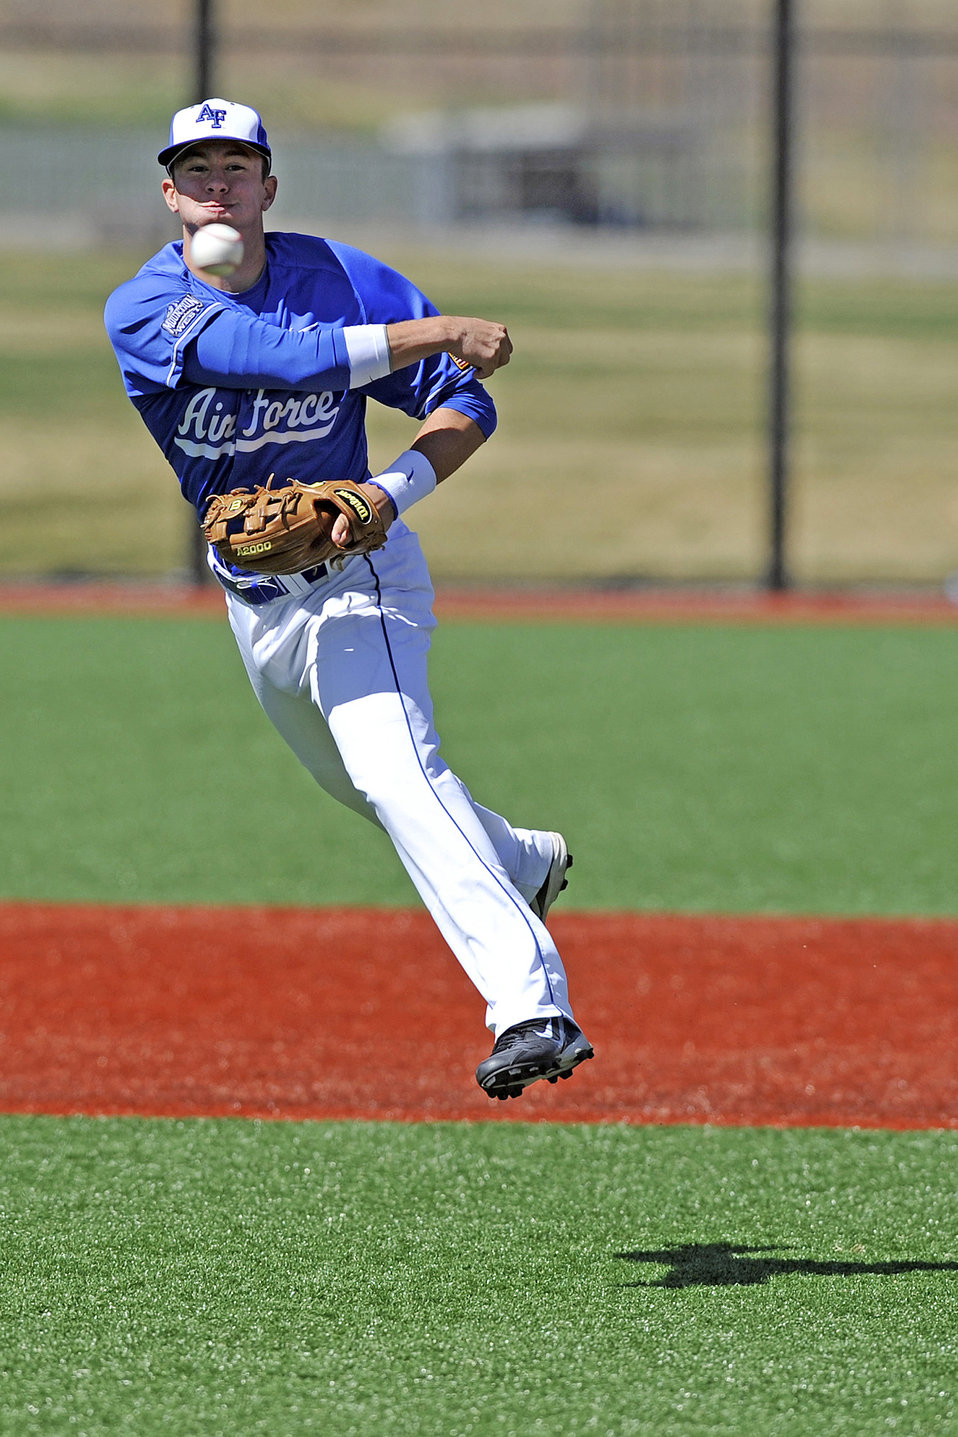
Falcons vs. Aztecs

Sophomore 2nd baseman Matthew Roberts makes a throw to first base during a match against San Diego State April 22, 2011, at Falcon Field in Colorado Springs, Colo. The Falcons defeated the Aztecs 7-3. The win was the first for the Falcons against the Aztecs in 35 contests dating back to 2003.